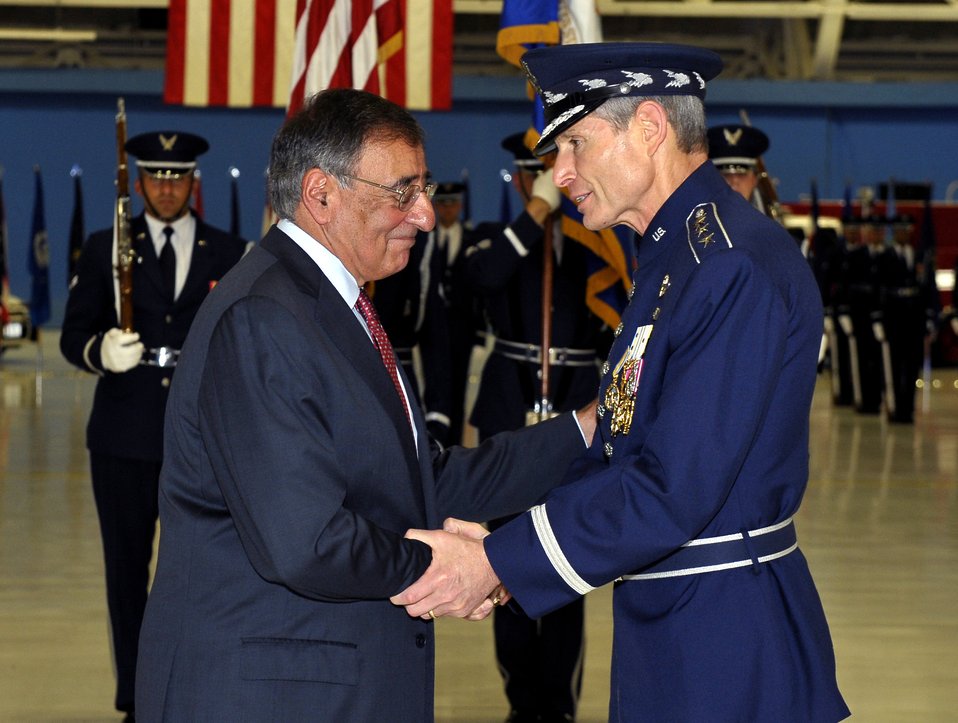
Welsh ‘humbled’ to serve as Air Force chief of staff

Secretary of Defense Leon Panetta congratulates Gen. Norton Schwartz on the occasion of his retirement during a ceremony at Joint Base Andrews, Md., Aug. 10, 2012. Schwartz served as Air Force chief of staff for four years and was succeeded by Gen. Mark A. Welsh III. Welsh previously commanded U.S. Air Forces in Europe.